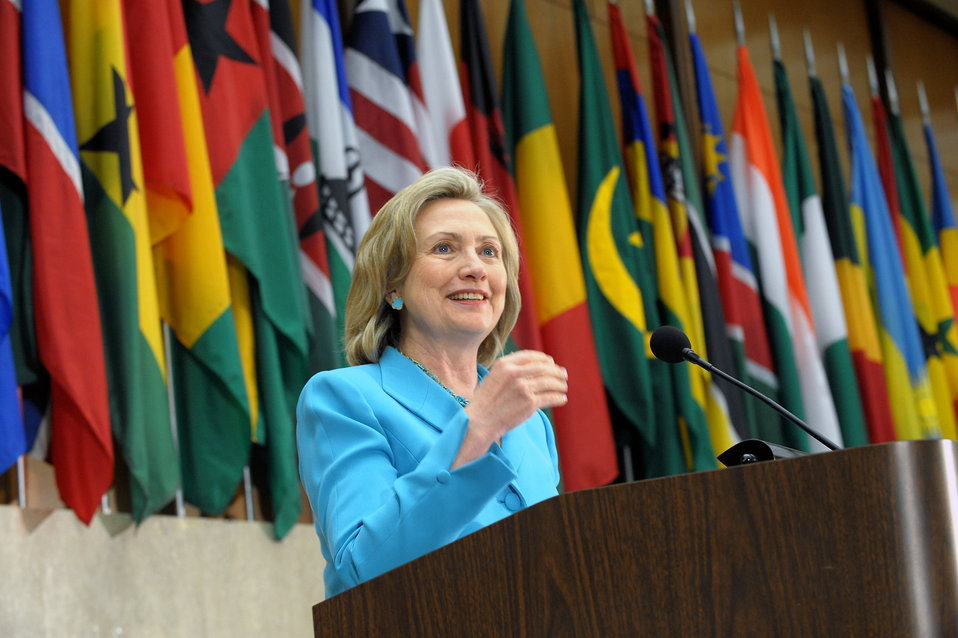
Secretary Clinton Delivers Remarks to the President’s Forum With Young African Leaders

U.S. Secretary of State Hillary Rodham Clinton delivers remarks to the President’s Forum with Young African Leaders at the U.S. Department of State in Washington, D.C., on August 3, 2010.